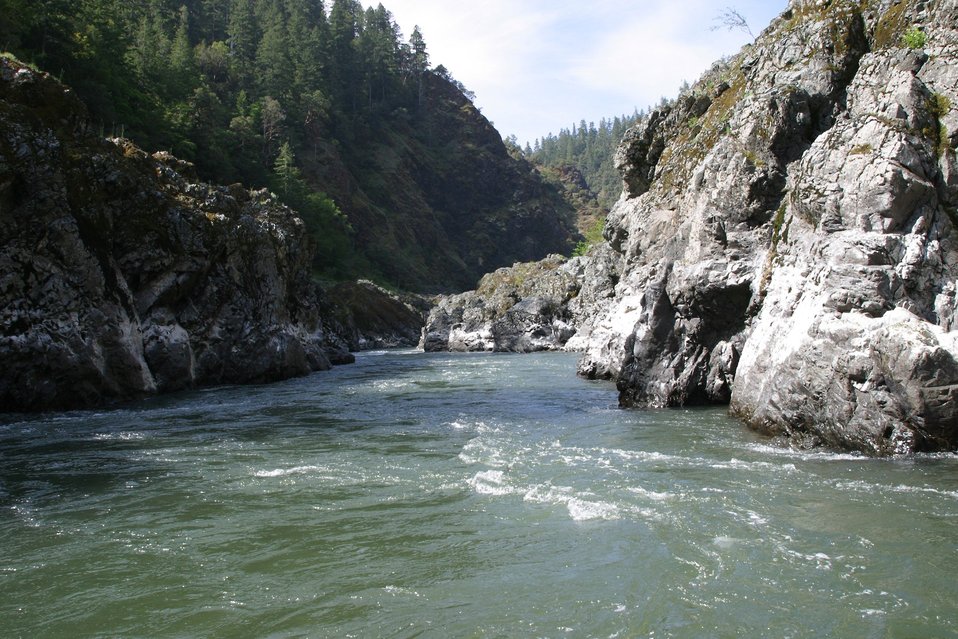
Wild section of the Rogue River from Grave Creek to Foster Bar May 19 to May 22.